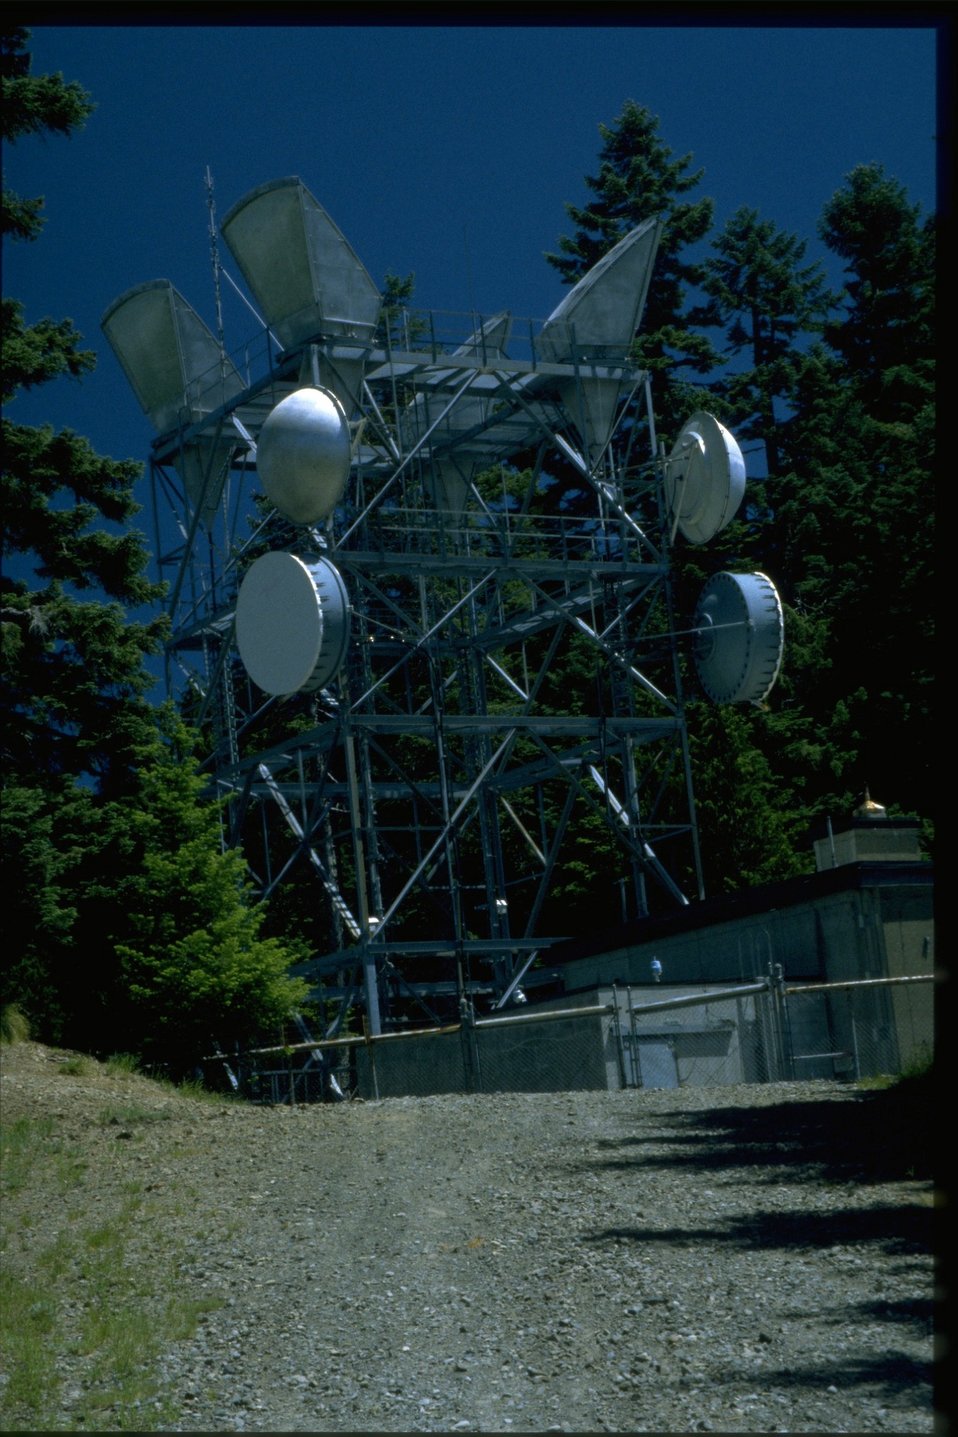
Microwave Relay Station.